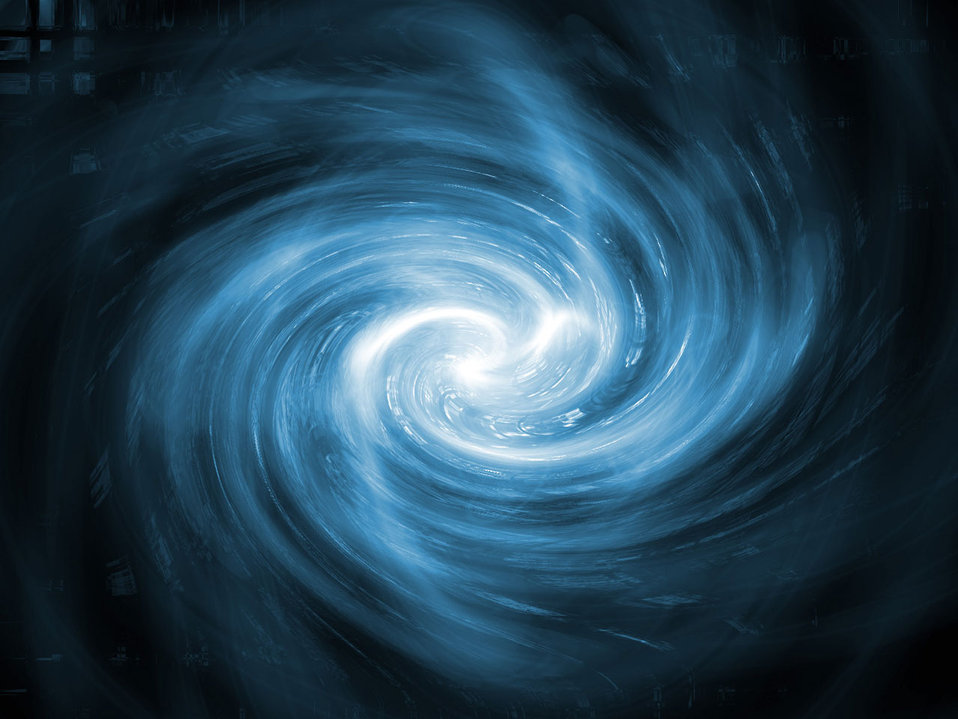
Blue fractal background..